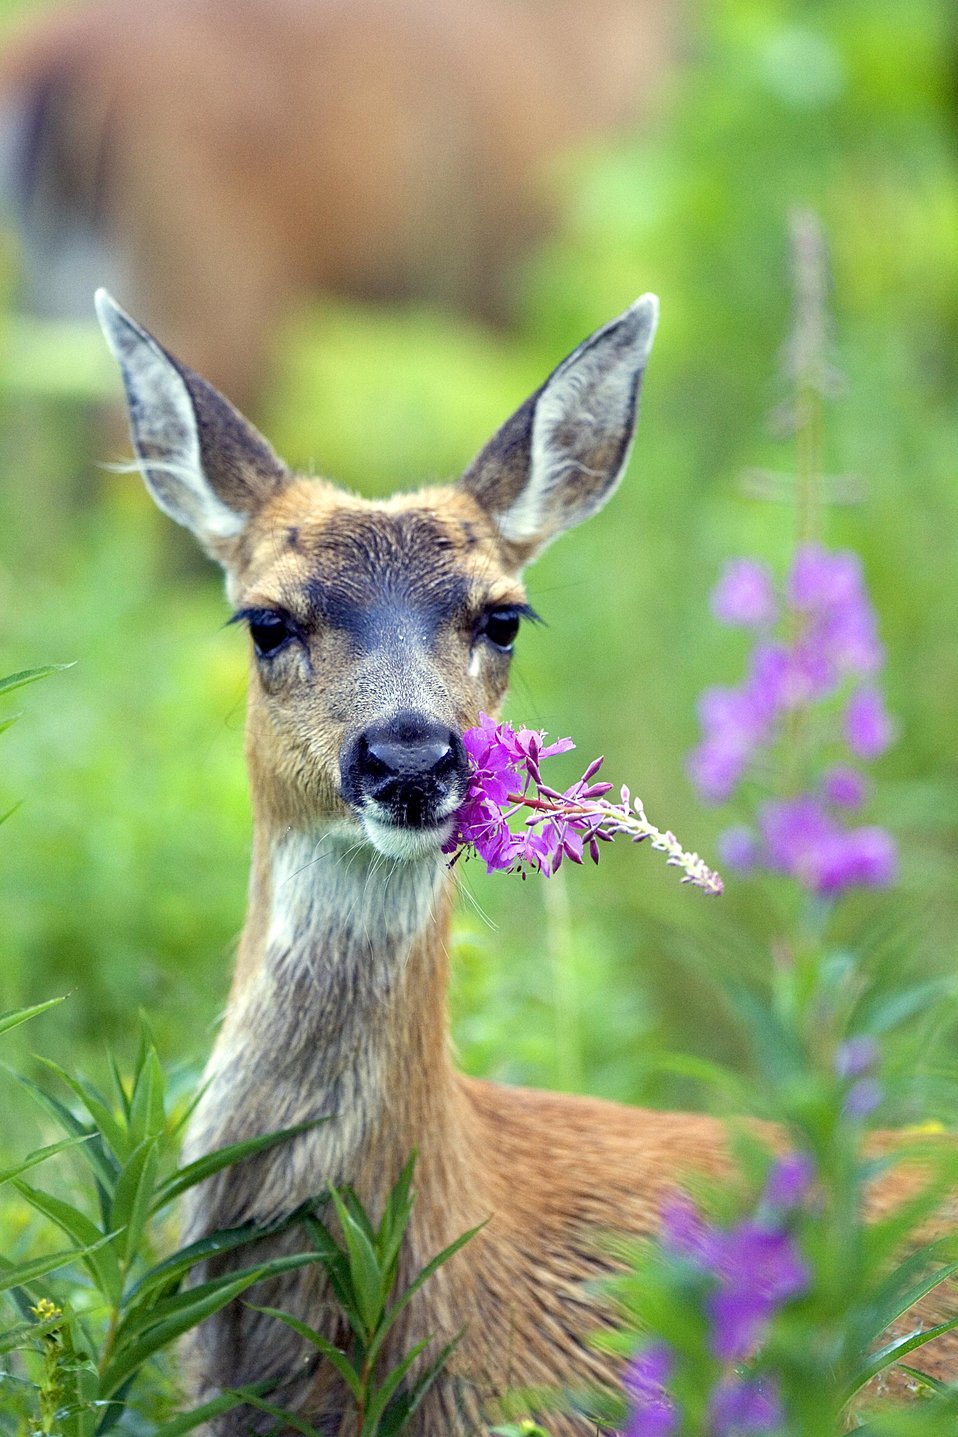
KOD Hildebrand (7)

Kodiak National Wildlife Refuge- Wildlife